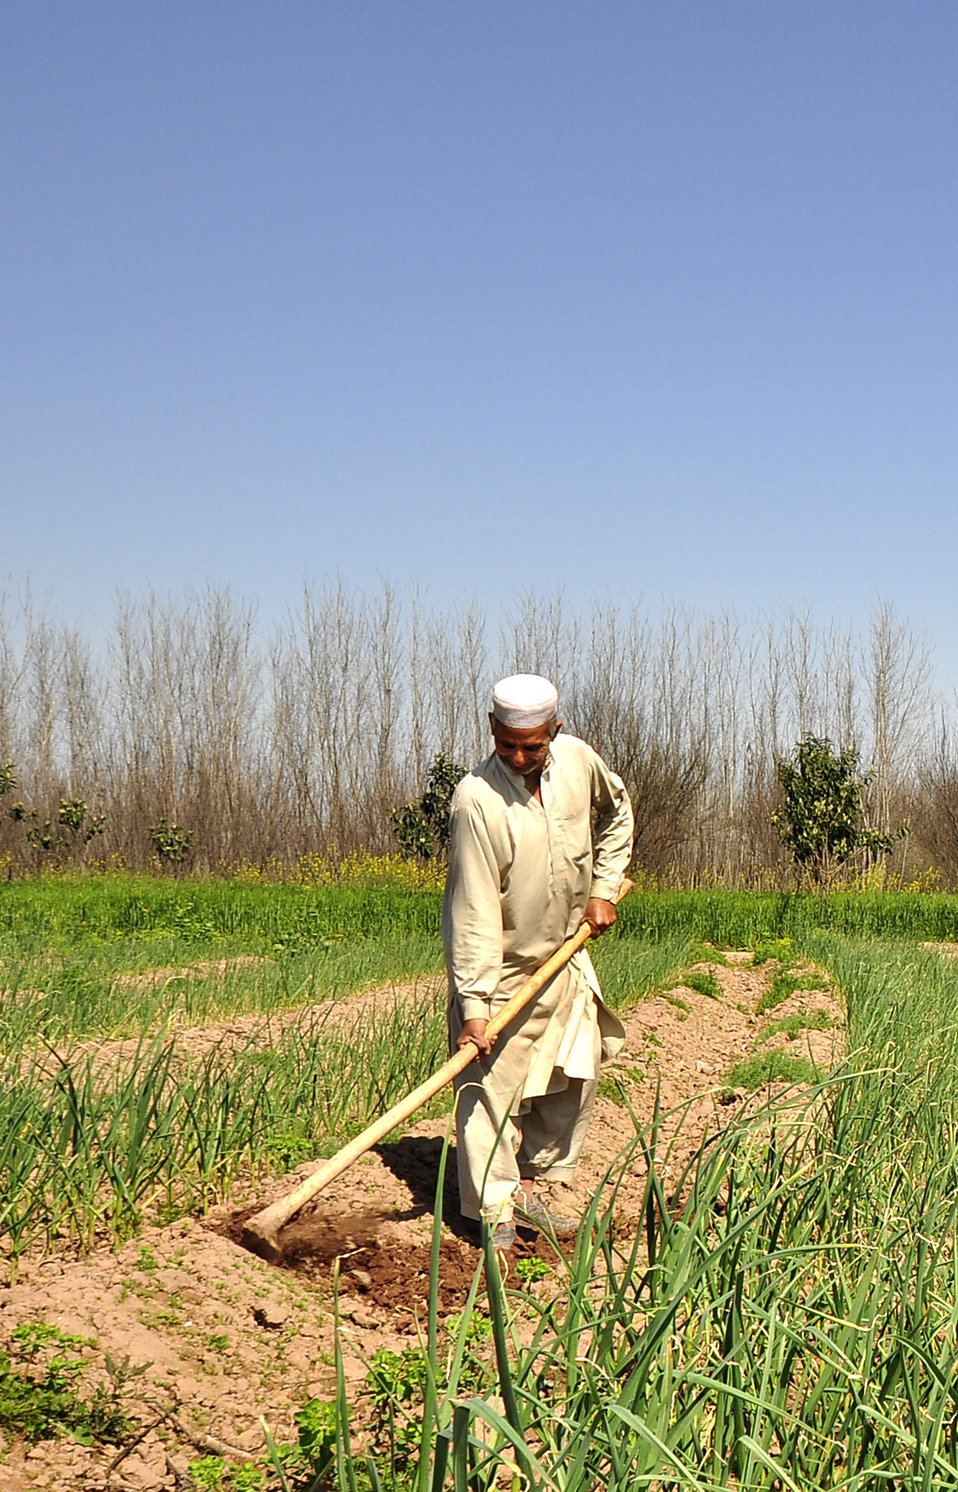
2011 March: USAID's Agricultural Recovery Program in 22 districts of Khyber Pakhtunkhwa, Punjab and Balochistan is an excellent example of the impact US development assistance can have. We have helped more than 500,000 farmers salvage the winter planting season and livestock after the floods. As a result, wheat farmers have nearly doubled their harvests. More than 5 million people have benefited. These photos show progress of the USAID Agricultural Recovery Project in Khyber Pakhtunkhwa.